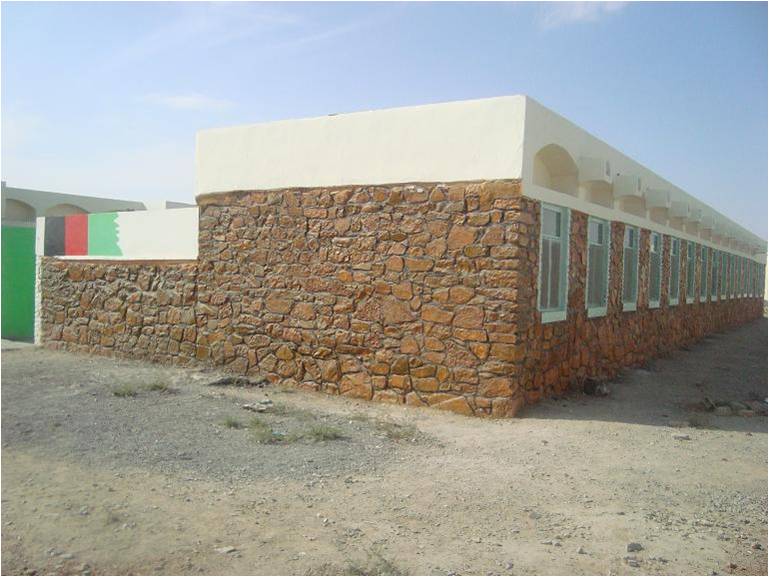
Children Return to School in Kandahar

With a student body of more than 250 children drawn from four villages, Aloku School is the largest and most important primary school in Kandahar’s Dand District. However, parents had been increasingly reluctant to send their children to school because of poor security and deteriorating facilities. With a grant from USAID’s Local Governance and Community Development (LGCD) project, these children are now returning to school.
In Kandahar, community leaders are reclaiming their children’s right to education. Aloku School was missing doors and win-dows and the roof leaked. The badly damaged boundary wall did little to stop wild dogs from entering the building during classes or drug addicts from using the building at night. The school principal and members of the affected communities re-quested a grant to build an 80-meter security wall, which they designed with support from the U.S. Marine Corps and a British reconstruction team based in Lashkar Gah. The team also as-sisted with making improvements to the school building, and community leaders paved the road leading to the school. In addition to benefitting Dand District children, the project pro-vided temporary jobs for 45 local men.
Engineers from the Afghan Department of Education and De-partment of Rural Rehabilitation monitored construction on a regular basis. During one site visit, a representative from the Education Department said, 'The rehabilitation of this school has had a positive impact on the community. Students' interest in learning has increased. More people have shown interest in sending their children to the school.'
The Aloku school project is an excellent example of coordina-tion between community leaders, local government, and inter-national partners. The hope is that parents in neighboring districts will draw inspiration from the success of this project and work to undertake projects to restart education in their own communities.
As USAID’s flagship stabilization effort, LGCD works to engage communities in unstable areas to take an active role in their own security and addresses priority grievances of at-risk populations through integrated community development projects.